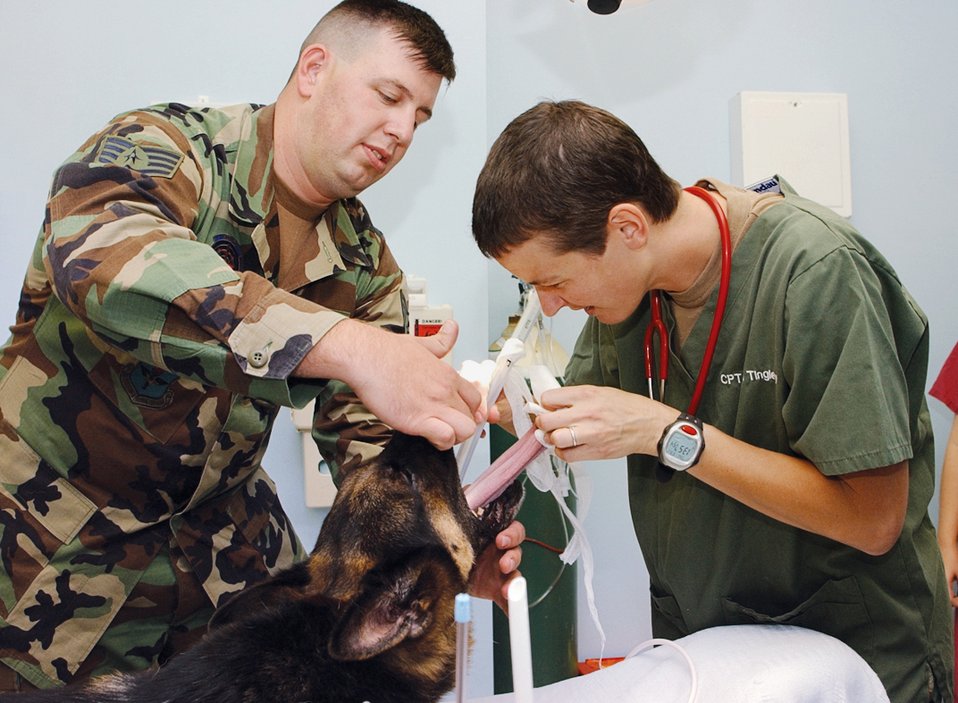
Working dog receives 'canine' treatment

TYNDALL AIR FORCE BASE, Fla. (AFPN) -- Staff Sgt. John Russum holds Rex's mouth open as Army Capt. (Dr.) Leah Tingley, inserts a breathing tube in his throat. Rex was sedated during the procedure and during the root canals. Sergeant Russum is a dog handler with the 325th Security Forces Squadron.